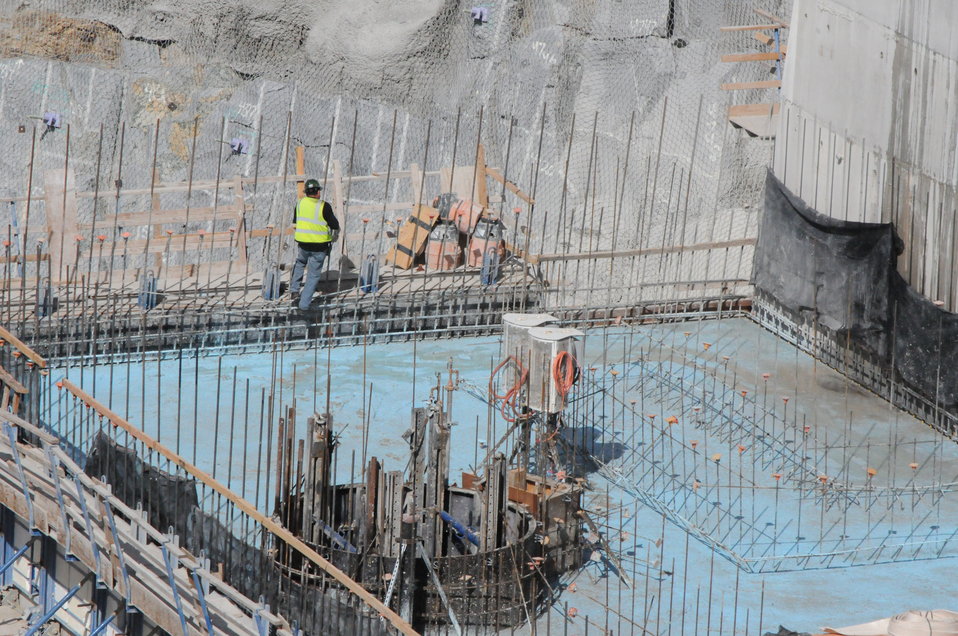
Placing Steel Rebar

Contractors working for the U.S. Army Corps of Engineers Sacramento District construct the support system for the rising Folsom Dam auxiliary spillway on March 14, 2013.